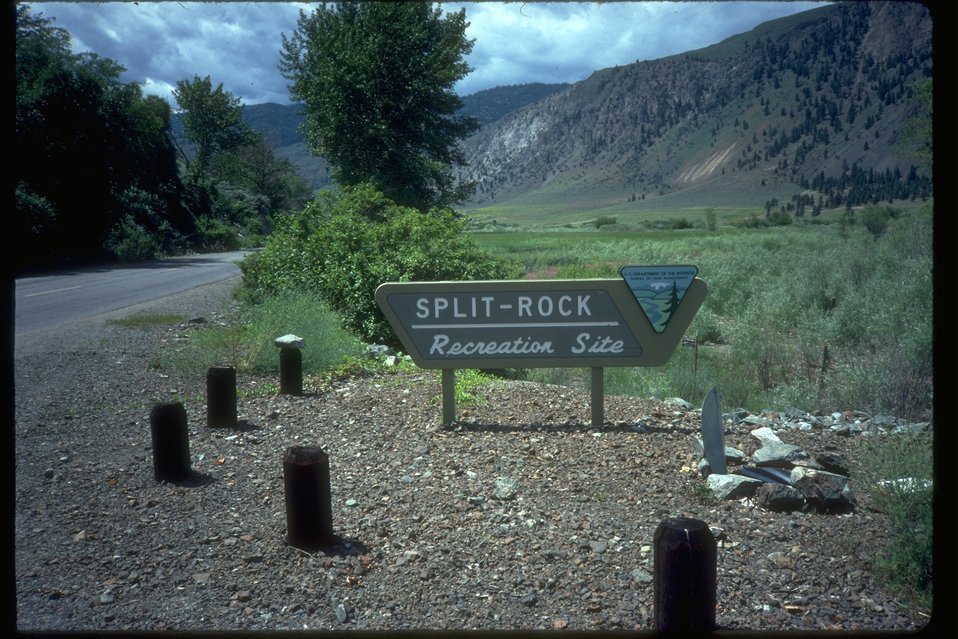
Sign for Split Rock campground at Palmer Lake, Okanogan County, Washington.